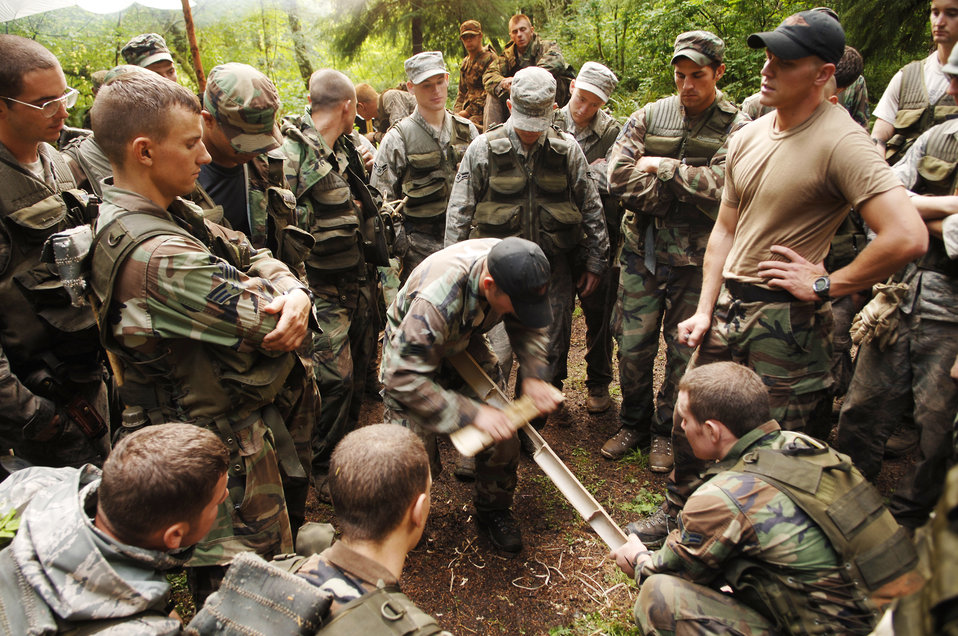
Students learn to survive in 'Tropics'

A Survival, Evasion, Resistance and Escape Course instructor from Fairchild Air Force Base, Wash., shows students how to create a fire using bamboo in the